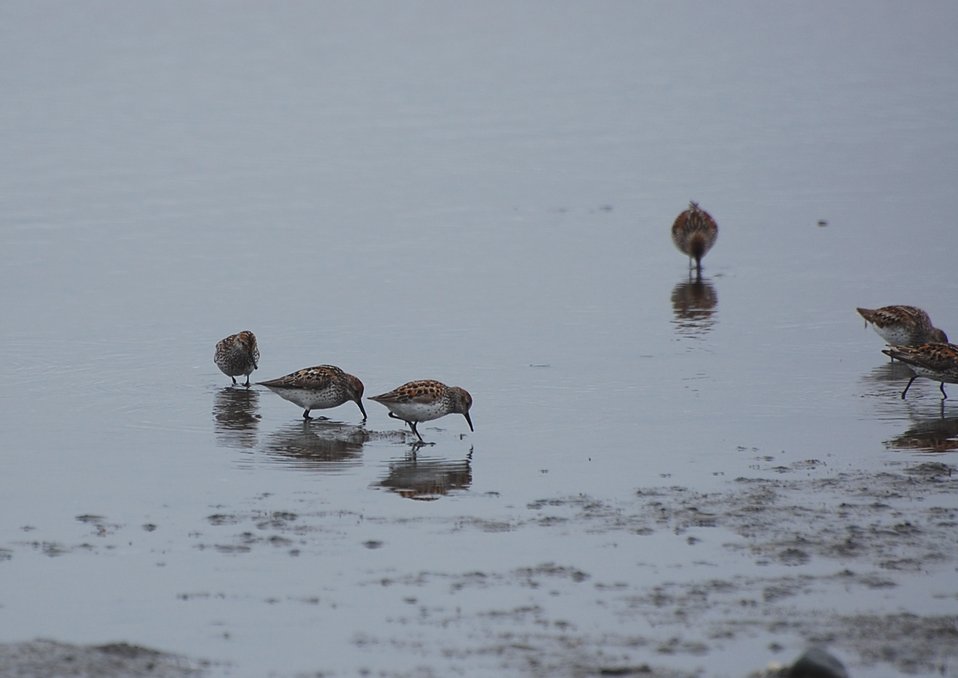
Western sandpipers

Kinzarof Lagoon, Izembek National Wildlife Refuge
Photo by Kristine Sowl,
USFWS, Public Domain